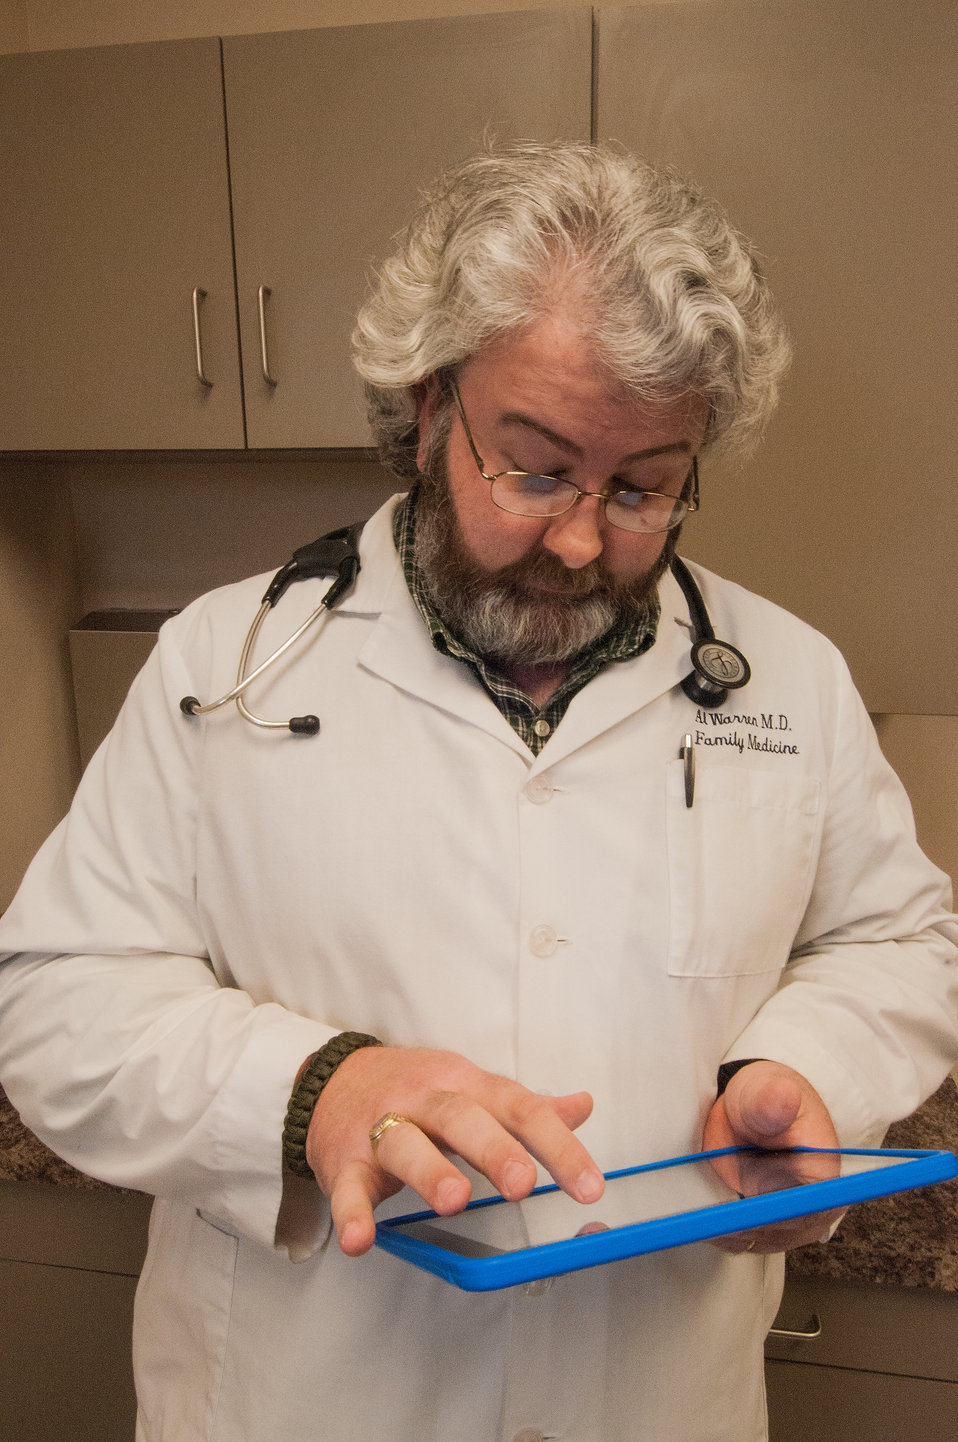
R.J. Taylor Memorial Hospital, Inc. Family Medicine Physician Dr. Albert Warren, MD reviews patients’ diagnosis, symptoms and records the information on an electronic tablet in Hawkinsville, GA on Mar. 6, 2013. Electronic medical records are essentially an electronic point-of-care capture of medical data that can be easily accessed and allow for integration across different health care settings by an embedded internet-work connected enterprise wide information systems. Such records may include a wide range of data in comprehensive or summary form, including demographics, medical history, medication allergies, immunization status, laboratory test results, radiology images and billing information. Patient data stored electronically is simplified for data gathering for running needed organizational, state, and federal reports, including demographics, medical history, and medication allergies. R.J. Taylor Memorial Hospital, Inc. purchased the Electronic Medical Records System under an incentive program by the Federal government through the U.S. Department of Agriculture (USDA) Rural Development (RD) Community Facilities Loan (CF) that ensures fiscally responsive access to superior quality integrated health care.